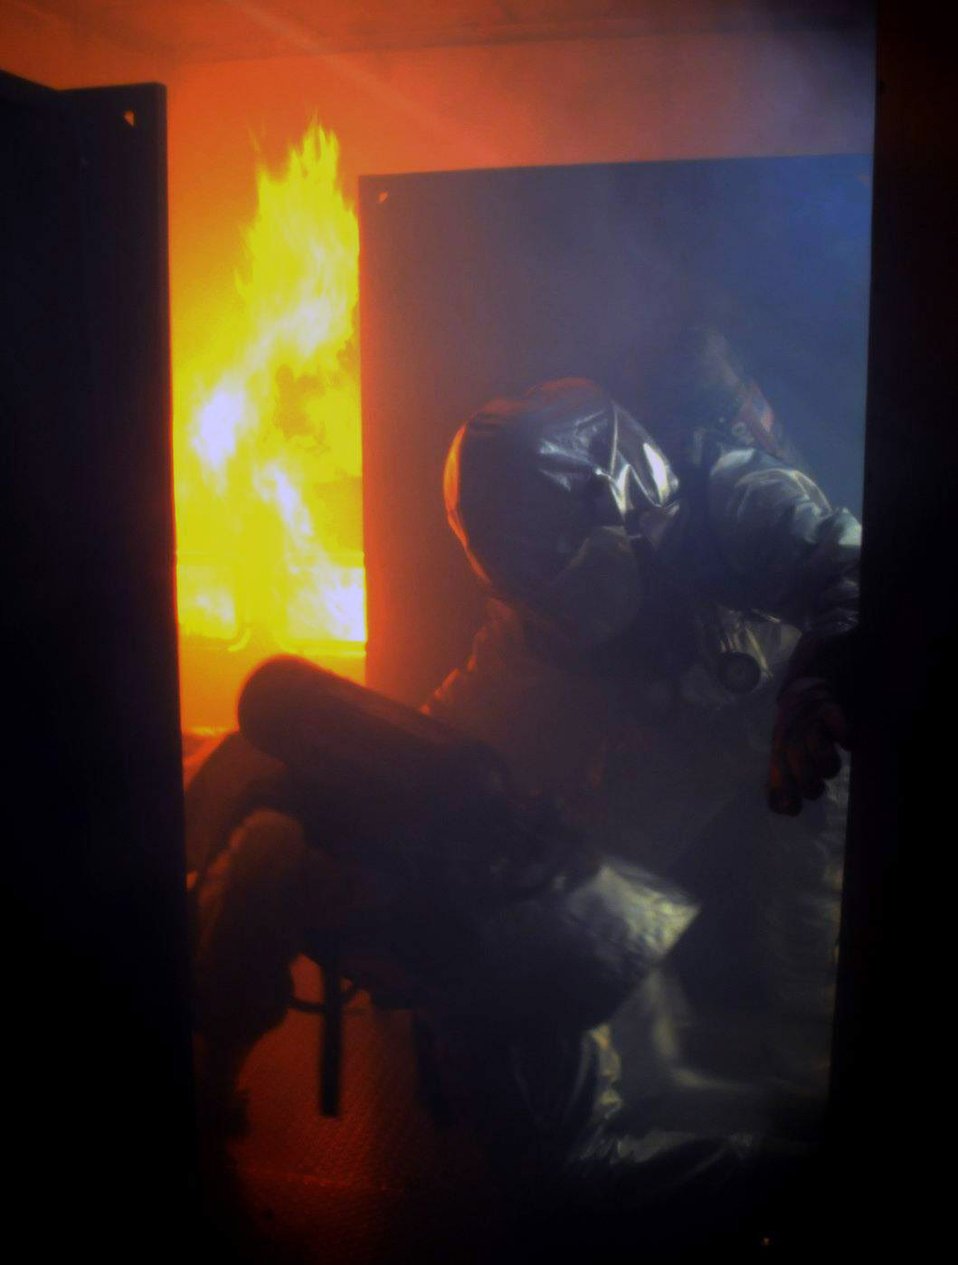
Succeeding at Silver Flag

Firefighters work to extinguish a fire during a Silver Flag exercise Feb. 5. Silver Flag is training for Air Force members to learn new skills in a simulated combat environment at Tyndall Air Force Base, Fla.